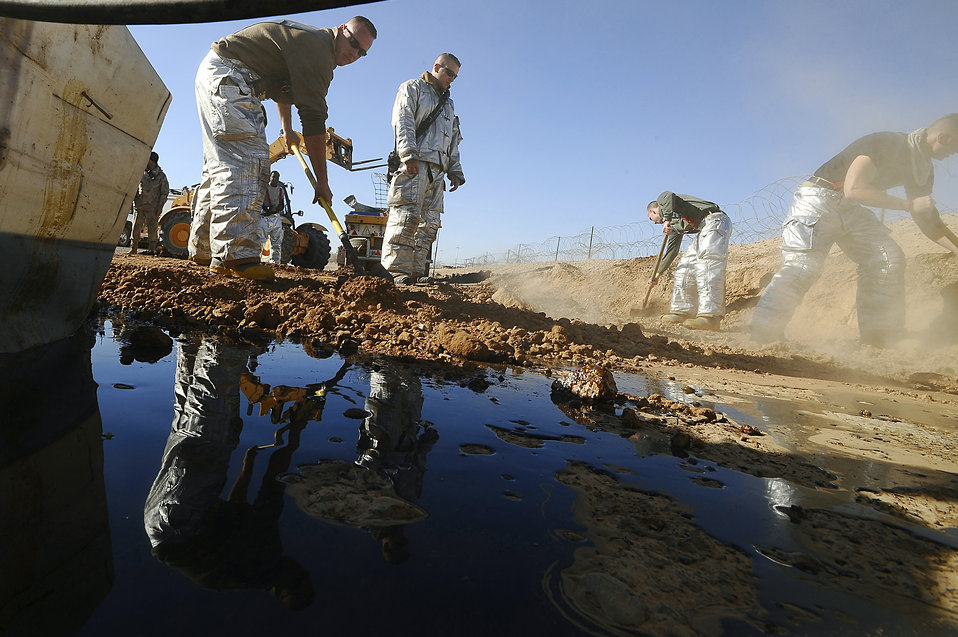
Clean it up now

Airmen and Soldiers with the fire department at Joint Base Balad, Iraq, clean up a non-toxic concrete additive spill Dec. 18 on base. The spill posed no environmental impact.